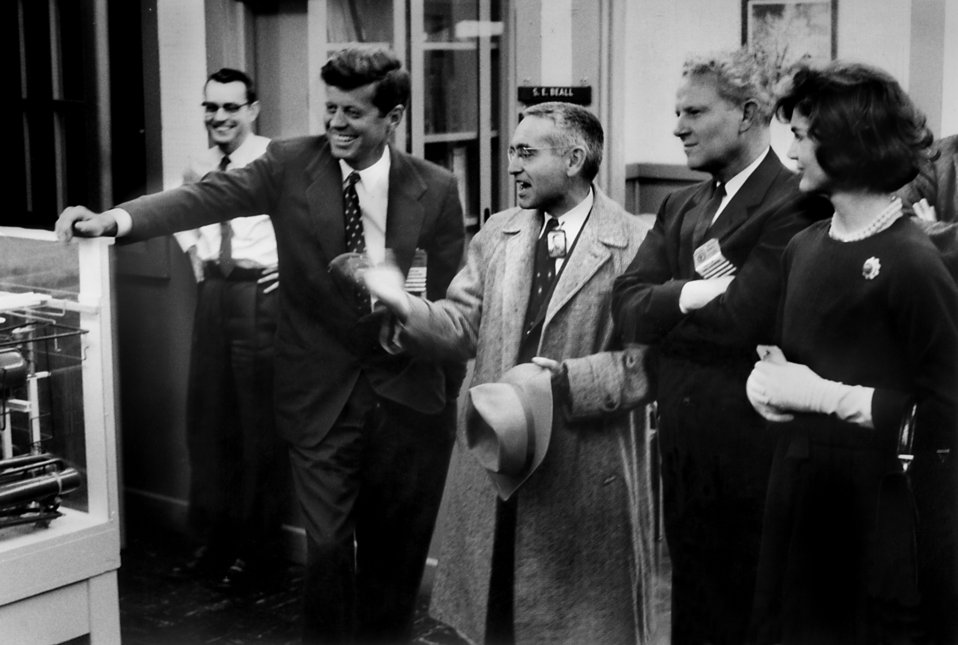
Sen. John F. Kennedy , Dr. Alvin Weinburg, Al Gore Sr. and Jackie Kennedy at the Graphite Reactor Oak Ridge National Lab.

59-0152-10 DOE photo by Ed Westcott

Sen. John F. Kennedy , Dr. Alvin Weinburg, Al Gore Sr. and Jackie Kennedy at the Graphite Reactor Oak Ridge National Lab. Oak Ridge Tennessee 2-24-1959